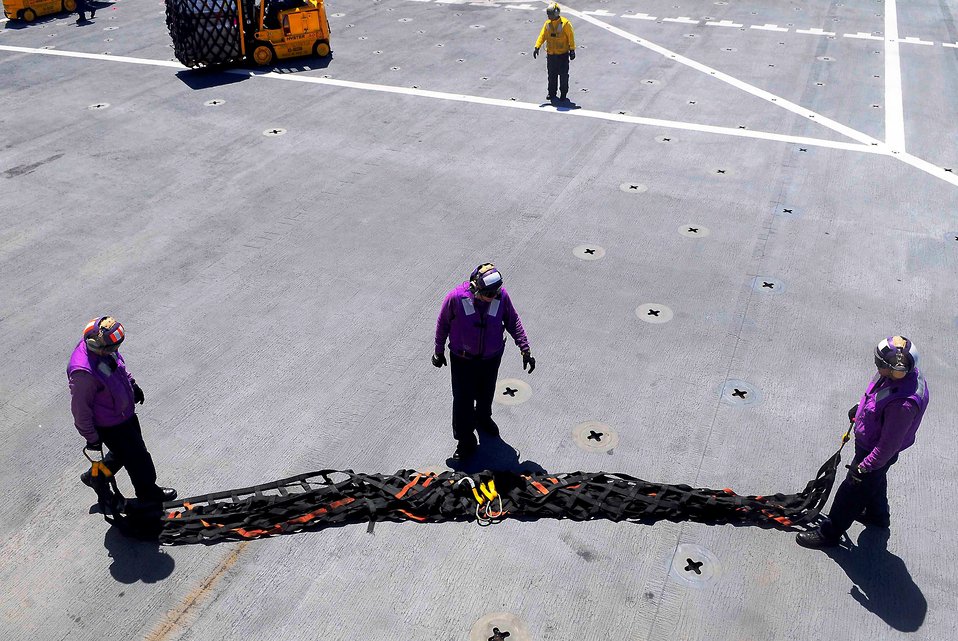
Sailors collect and fold a pallet cargo net from the flight deck aboard the Military Sealift Command hospital ship USNS Mercy (T-AH 19) during a vertical replenishment at sea in the Pacific Ocean on June 29, 2010. Mercy is conducting Pacific Partnership 2010, the fifth in a series of annual U.S. Pacific Fleet humanitarian and civic assistance endeavors to strengthen regional partnerships.